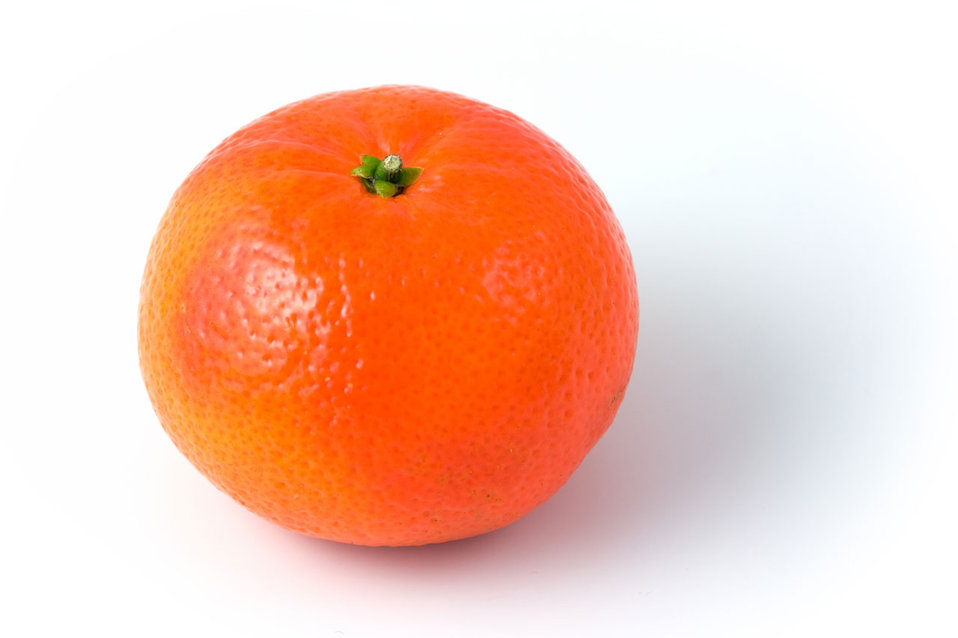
Clementine

A single clementine on white background.